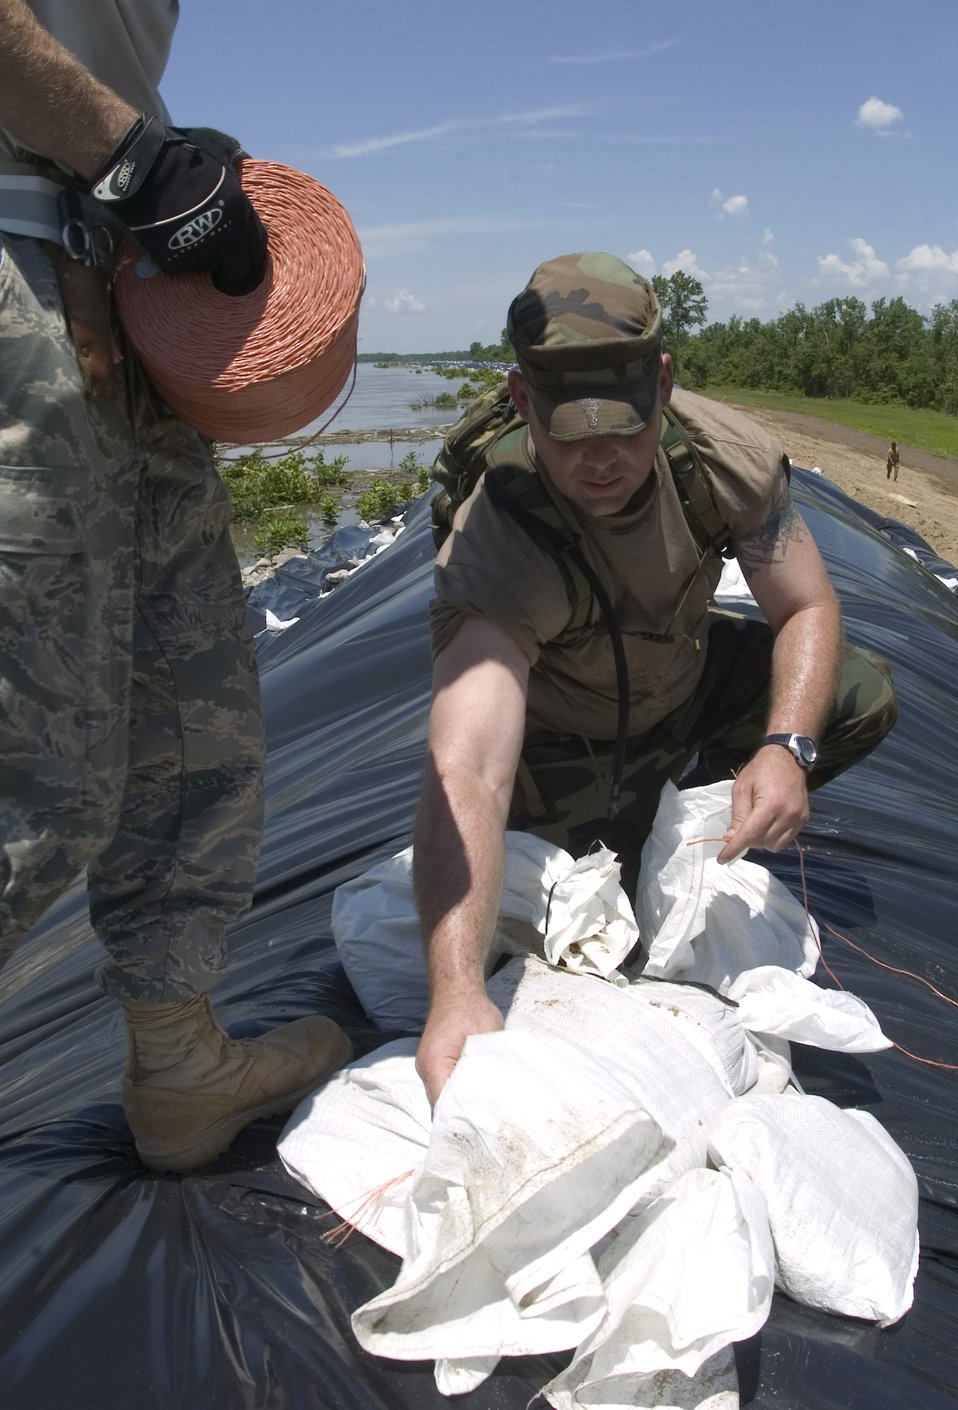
Illinois Air National Guard provides help

Senior Airman Aaron Rath secures two sand bags with rope June 19 to help prevent erosion along the Sny levee near Pleasant Hill, Ill. The Sny levee protects communities along the Mississippi River for 52-miles. Airman Rath is an Air National Guardsman assigned to the 183th Fighter Wing located in Spring Field, Ill.